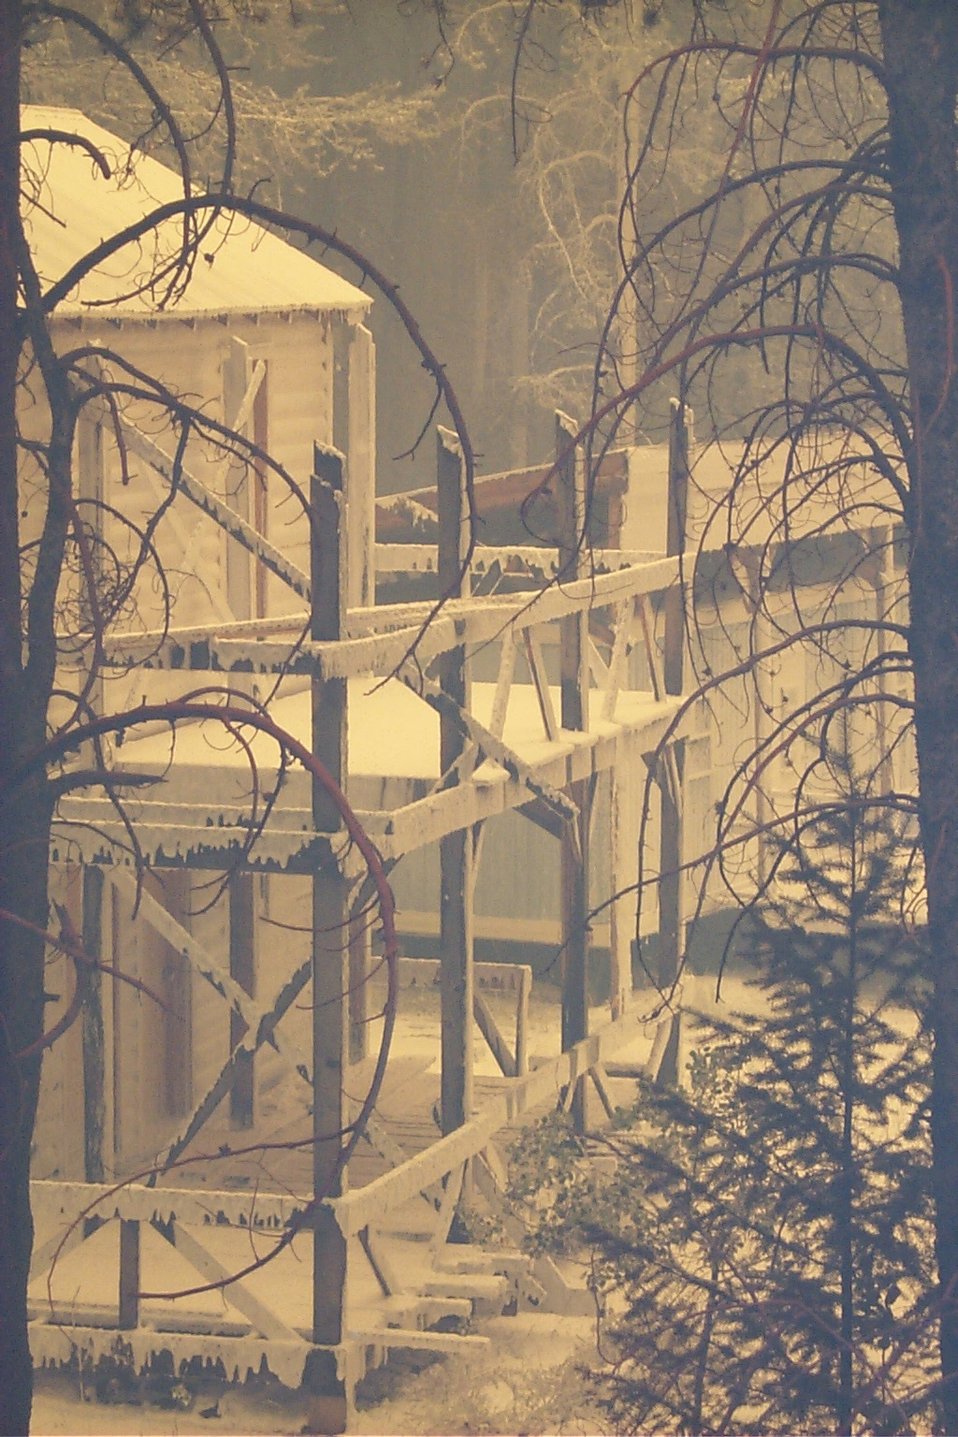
Fire retardant measures Urban interface Fire Clearwater Fire Salmon Field Office USRD Upper Snake River District